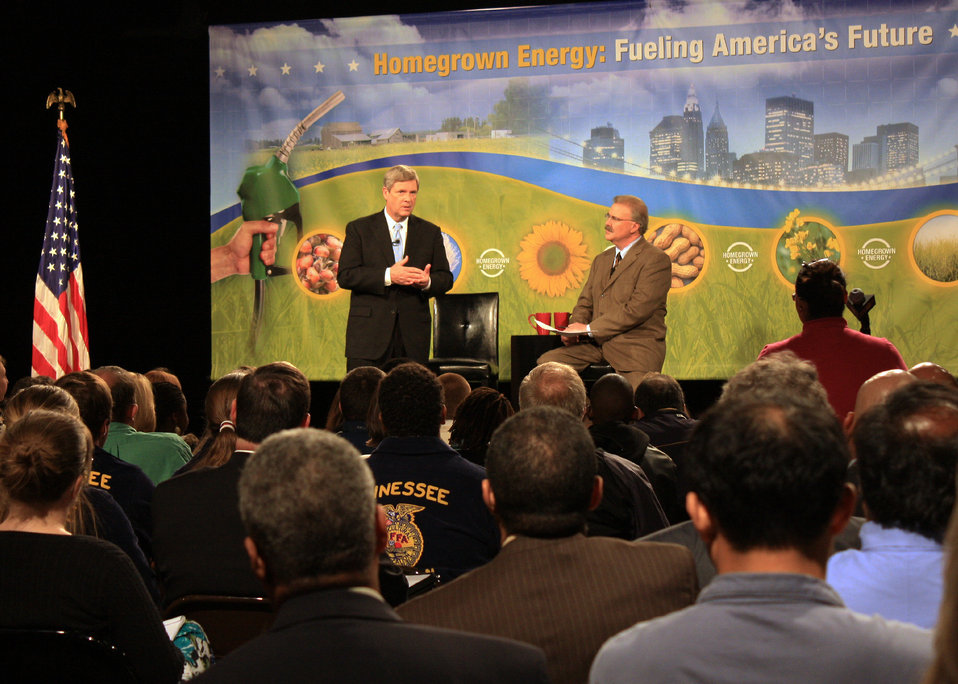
Agriculture Secretary Tom Vilsack appears on RFD TV in Nashville, TN, with RFD News Director Mark Oppold, on Monday, May 23, 2011.